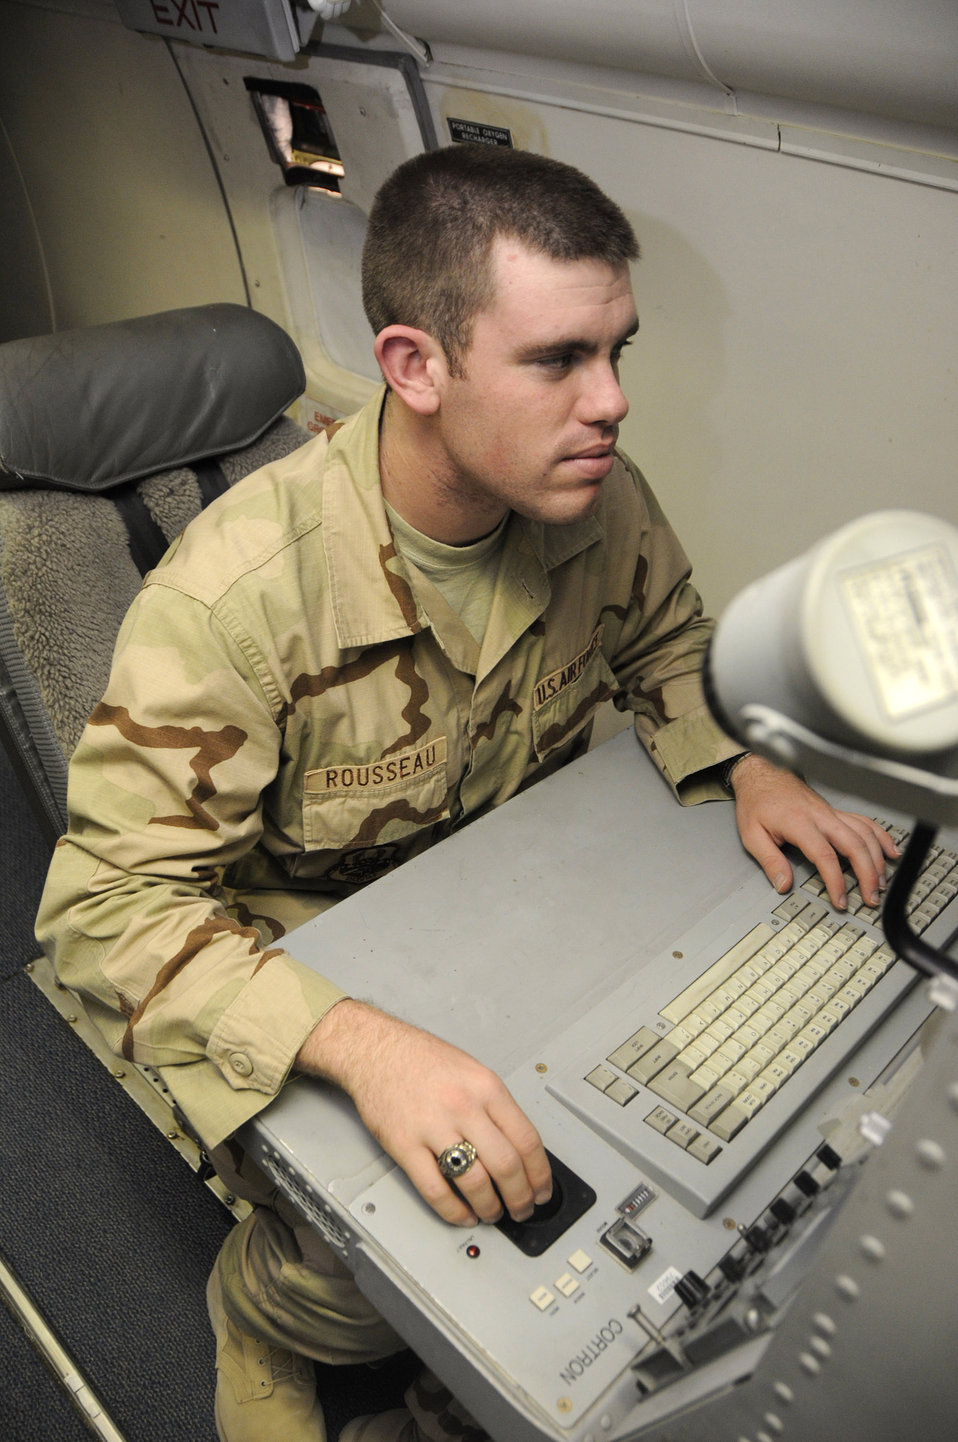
Cadets experience real-world deployment

Air Force Academy Cadet Shawn Rousseau familiarizes himself with a workstation aboard a RC-135V/W Rivet Joint reconnaissance aircraft June 19 in Southwest Asia. The cadets are visiting the base as part of the academy's Operation Air Force program, allowing them to experience an active-duty deployment. Cadet Rousseau graduates from the Air Force Academy in May 2009 and hopes to be an A-10 Thunderbolt II pilot.